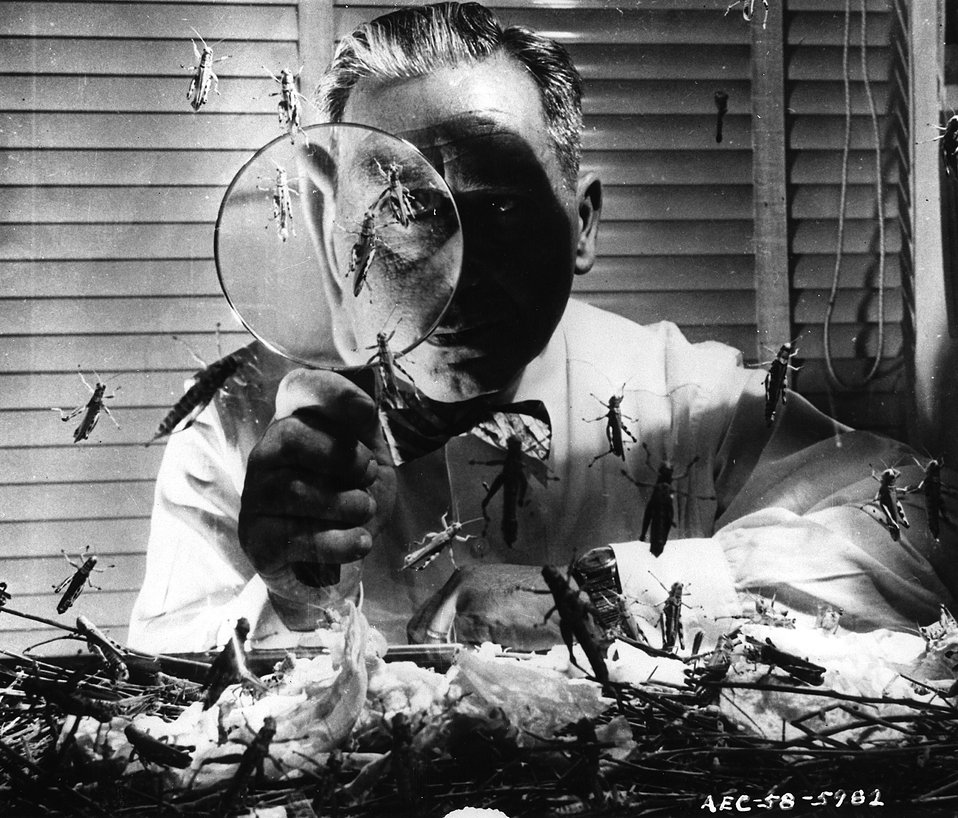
Grasshoppers are helping biological scientists at Argonne.
c.1958